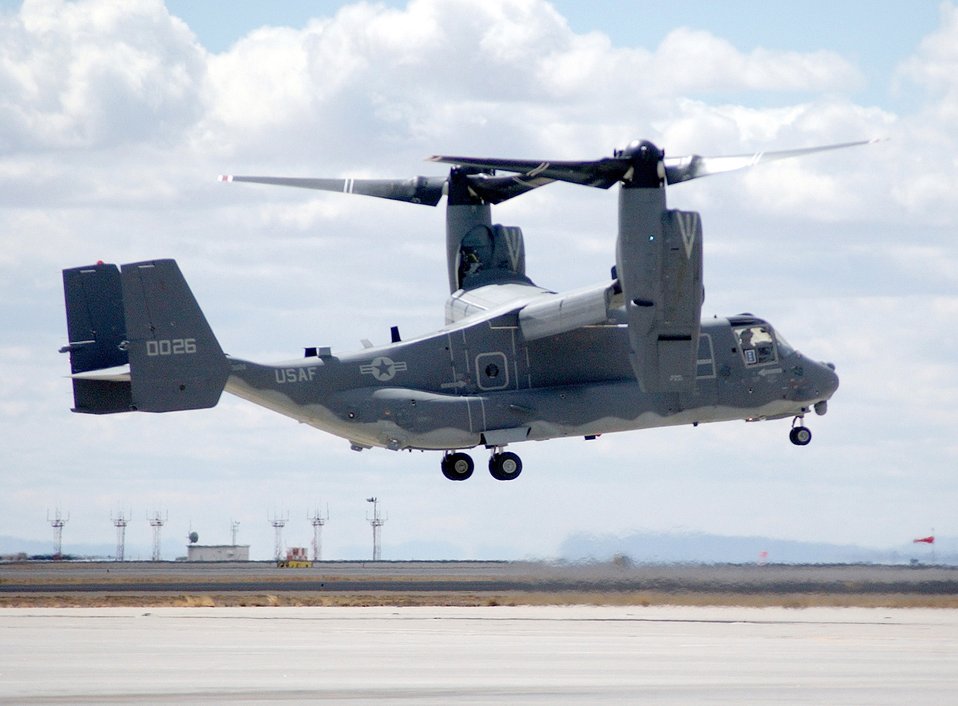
Osprey gets new nest

The Air Force's first operational CV-22 Osprey tilt-rotor aircraft hovers upon arrival at Kirtland Air Force Base, N.M., Monday, March 20, 2006. The aircraft will be flown by Airmen with the 58th Special Operations Wing to train future Osprey pilots.